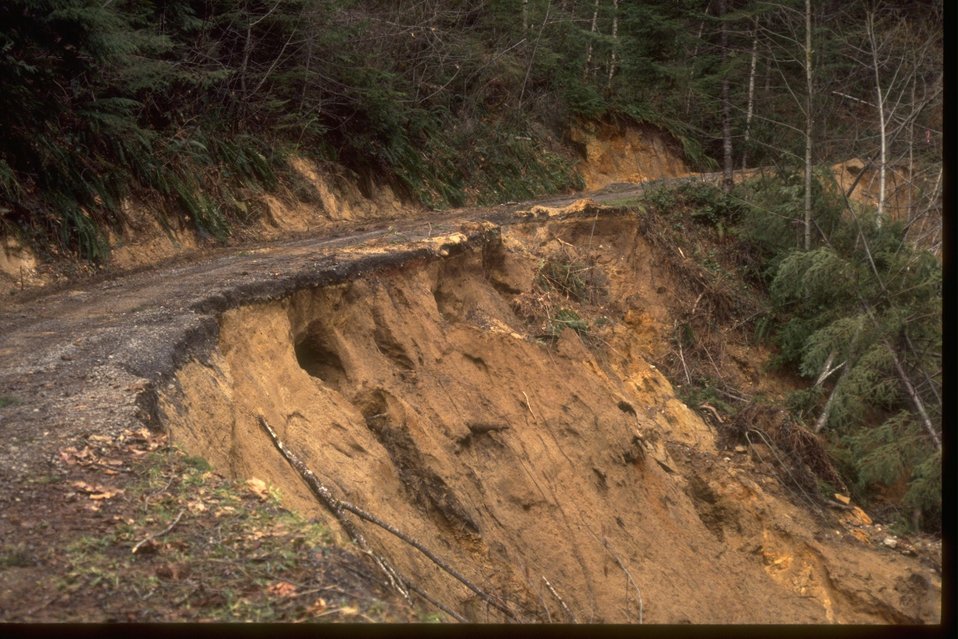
Road damage from landslide.